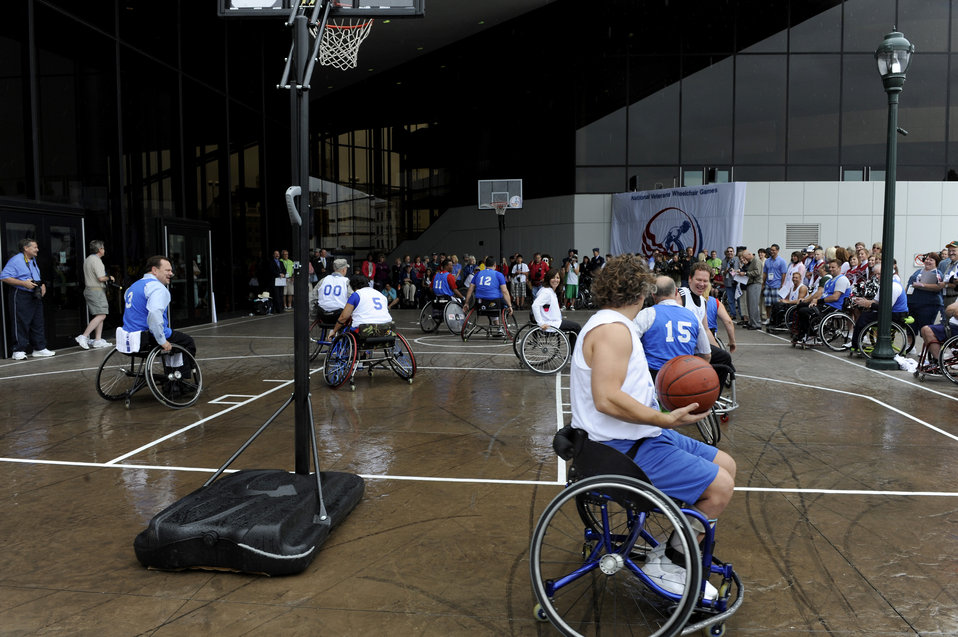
Veterans wheelchair games kick off

Veterans play a games of wheelchair basketball against media outlets July 13 during the 29th National Veterans Wheelchair Games held in Spokane, Wa . More than 500 veterans meet at the convention center to take part in the 2009 National Veterans Wheelchair Games July 13 through 19.